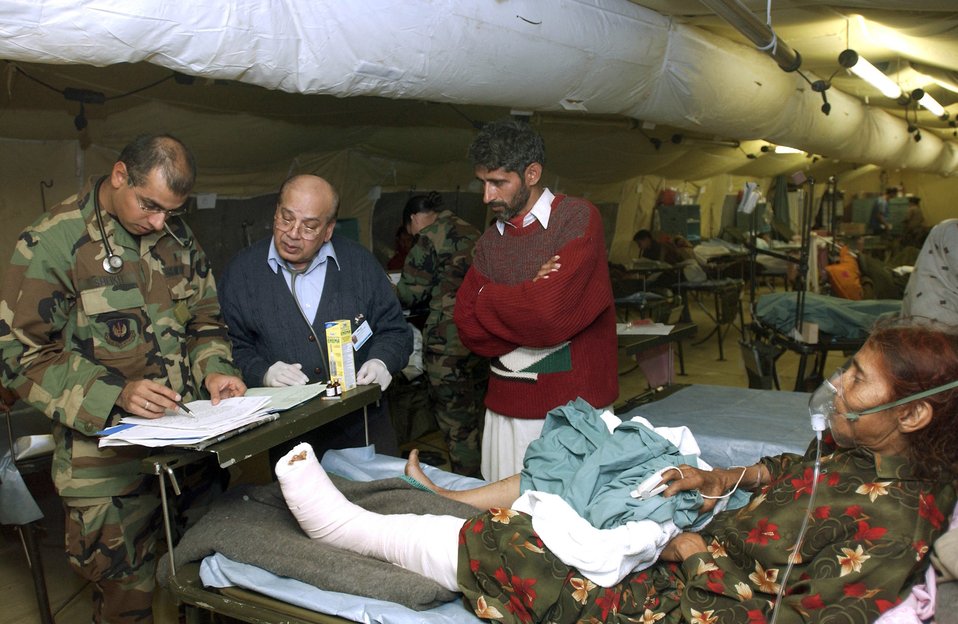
Pakistan Relief

MUZAFFARABAD, Pakistan (AFPN) -- Maj. (Dr.) Fareed Sheikh (left) and his father, Dr. Mushtaq Sheikh, a civilian physician, treat a patient at the 212th Mobile Army Surgical Hospital unit here. Both doctors are Pakistani-Americans. The hospital is helping with earthquake relief operations.